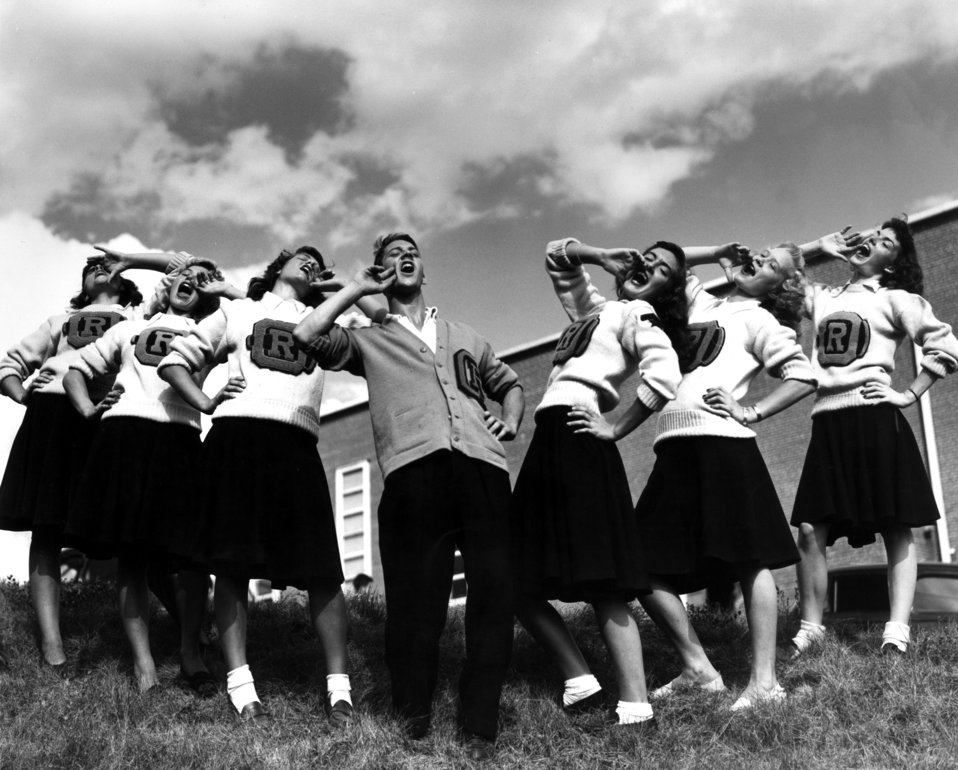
Oak Ridge High School Cheer Leaders

medfile53 DOE photo by Ed Westcott

Oak Ridge High School Cheer Leaders Oak Ridge Tennessee 1946